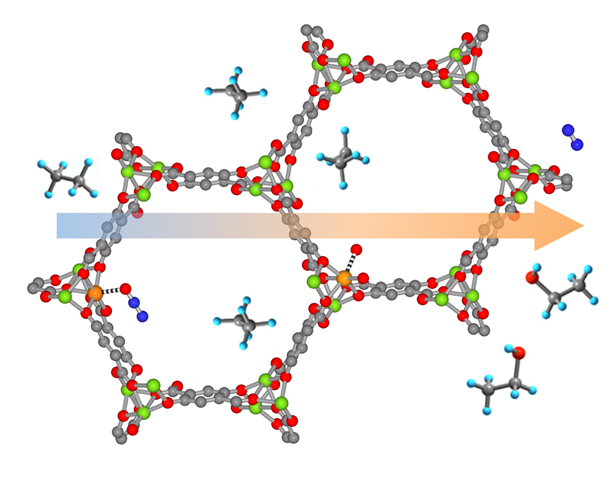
Iron-based Metal-organic Framework

This iron-based metal-organic framework (large structure) can catalyze a reaction that transforms ethane (gray and light blue molecules) into pure ethanol (light blue, red and gray). Scientists think the framework could help reveal ways to mimic other biological functions.